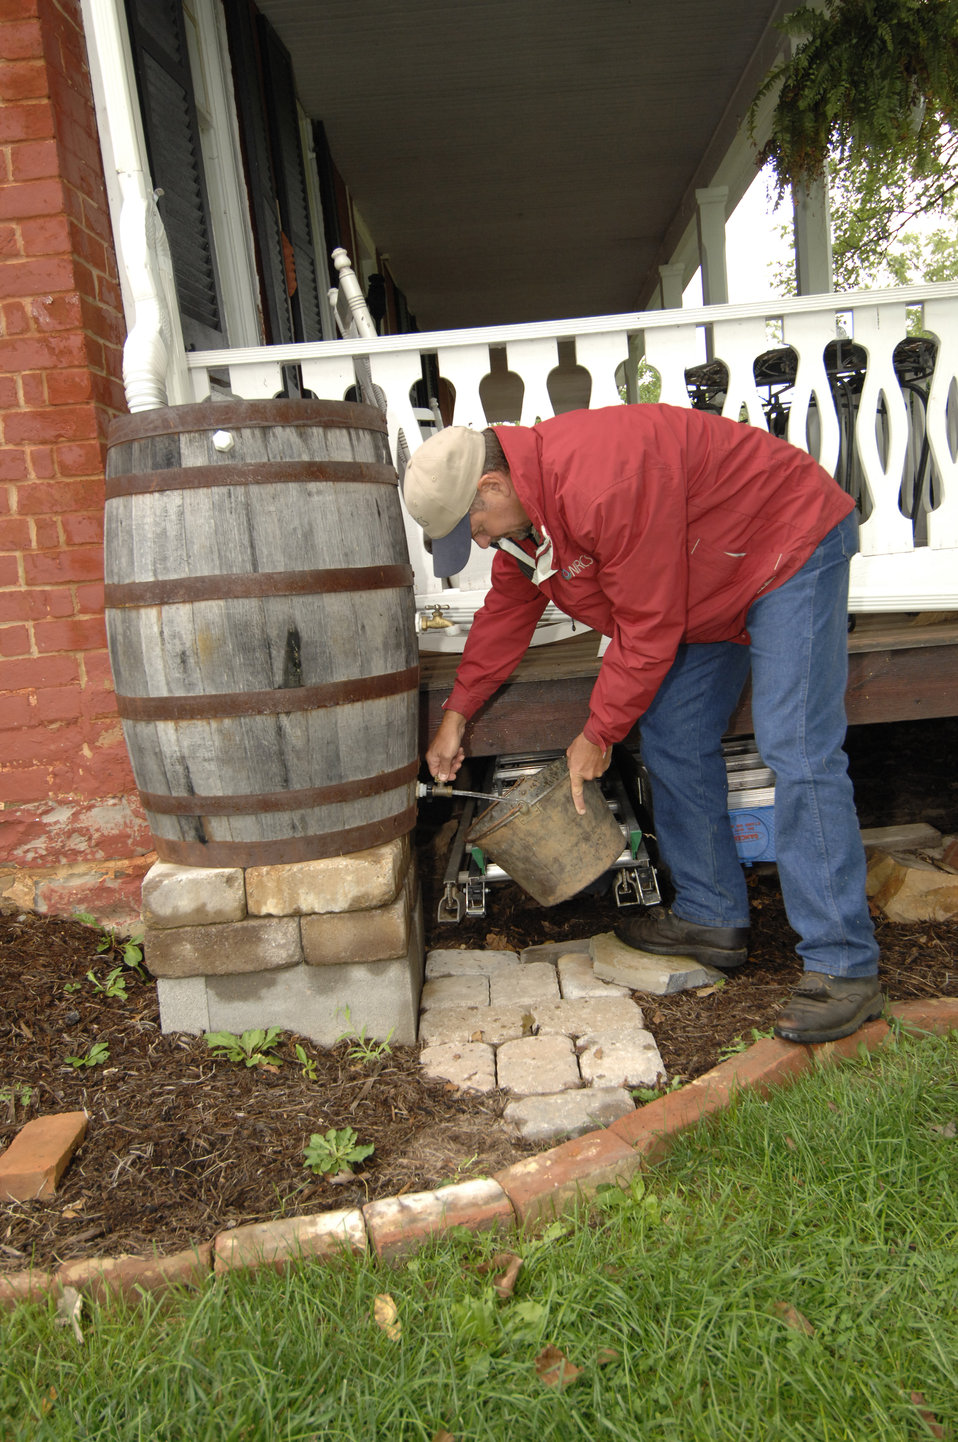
Local farmers collect rainwater in barrels to use for watering their gardens in Tidewater County, Virginia on September 9, 2008.